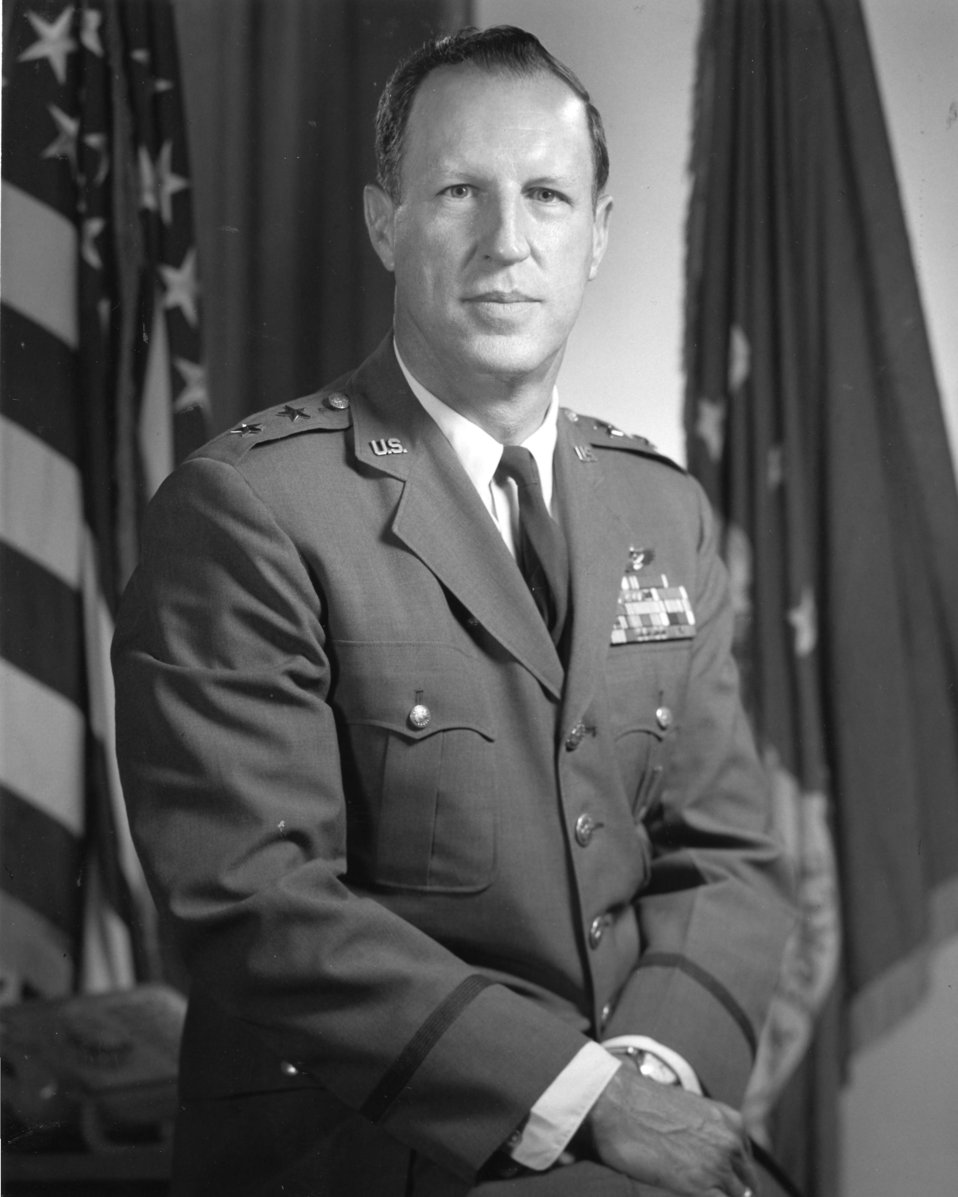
PORTRAIT OF MAJOR GENERAL EDWARD GILLAR, AEC OFFICE OF MILITARY APPLICATIONS (1972)